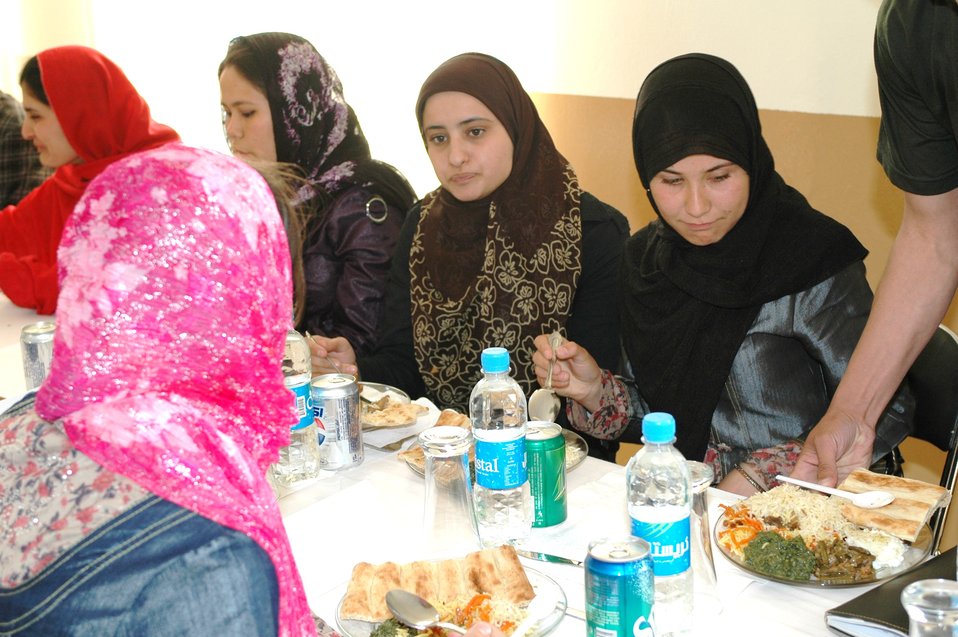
Dr Shah Visits Votech in Kabul